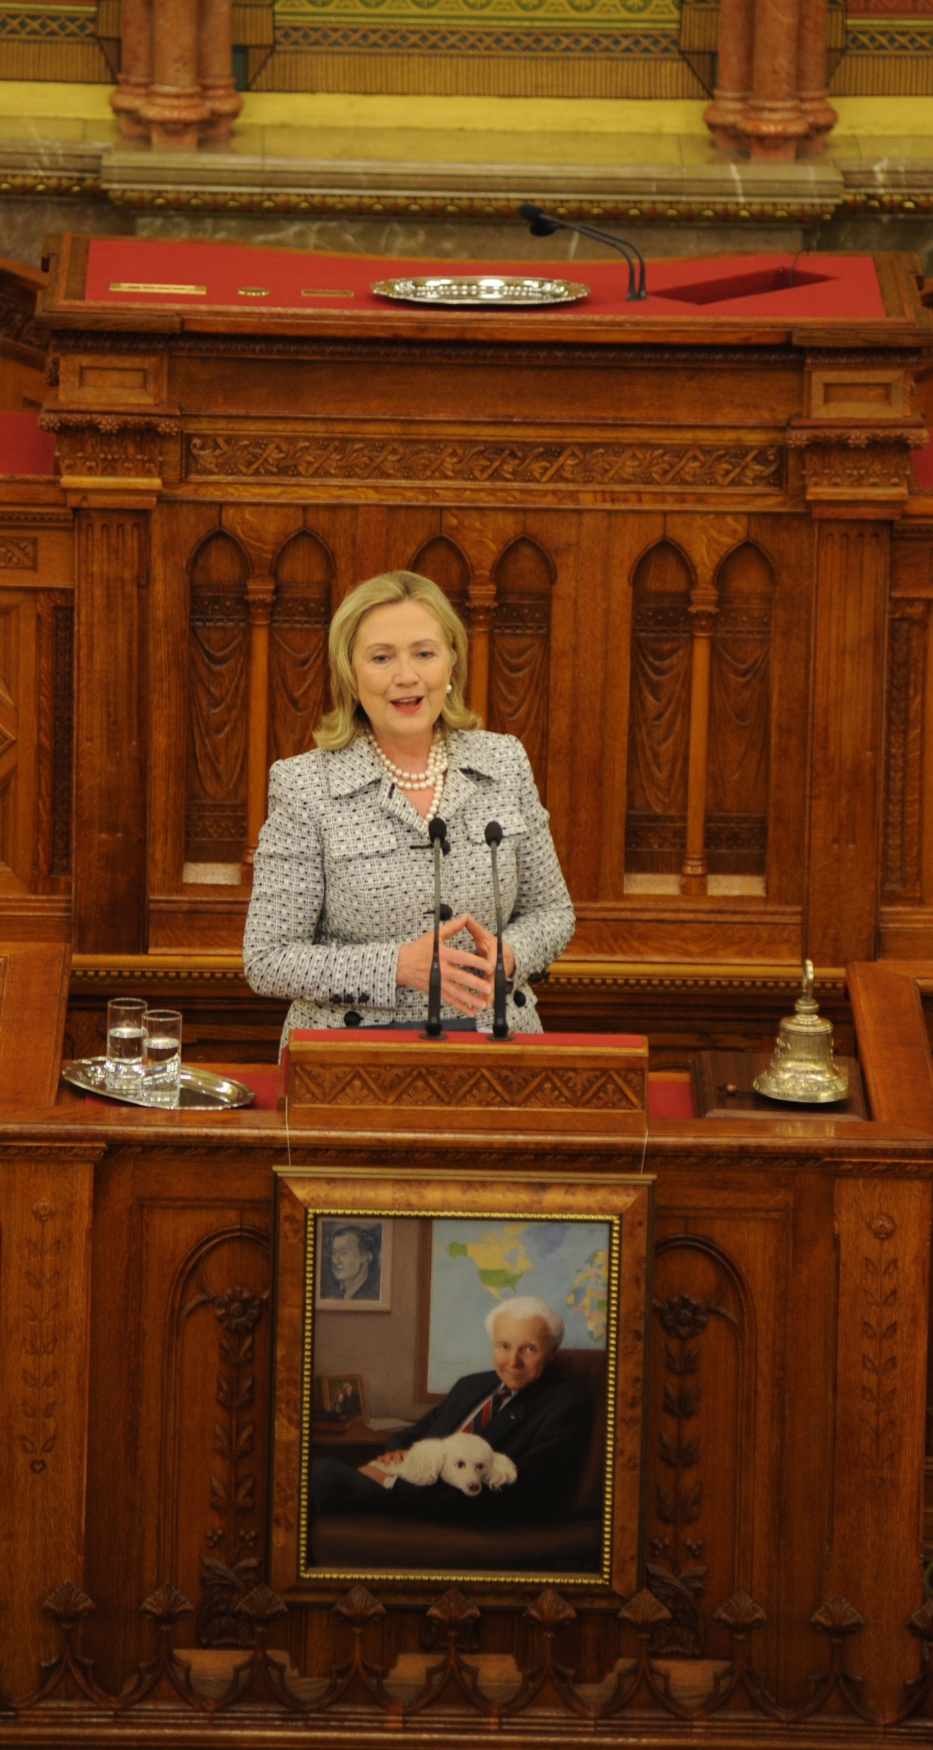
Secretary Clinton Delivers Her Speech During the Inauguration of the Tom Lantos Institute

U.S. Secretary of State Hillary Rodham Clinton delivers her speech during the inauguration of the Tom Lantos Institute in Budapest, Hungary, June 30, 2011.